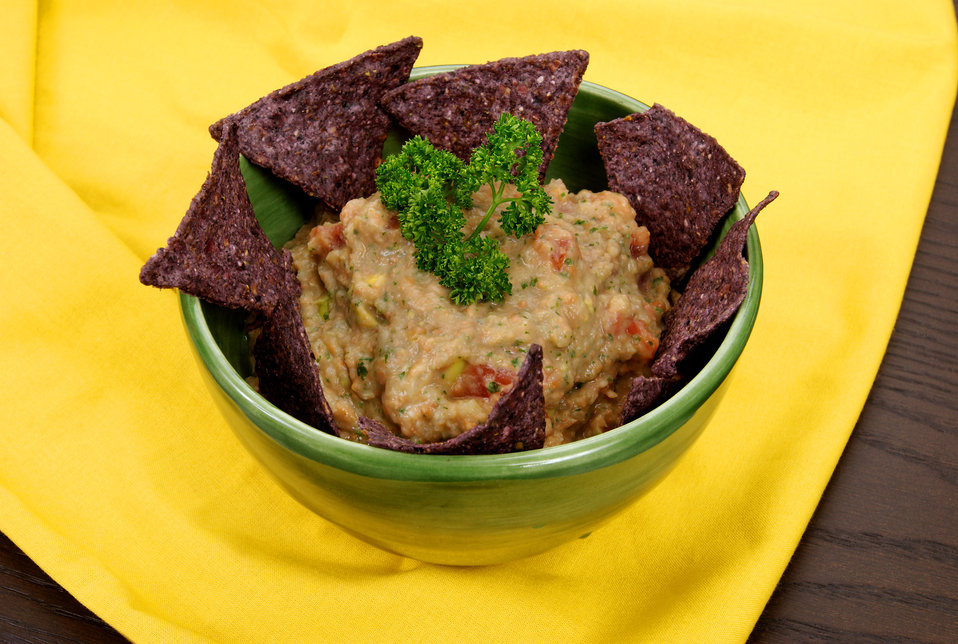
Garnished with a sprig of parsley, this image depicts a close-up of a bowl containing blue corn taco chips and guacamole dip. The recipe is a rather simple one, calling for mashed avocados, diced tomatoes, chopped garlic, minced onion, and an optional addition of lemon or lime juice. Some people spice to taste using salt, cumin, cayenne pepper, and cilantro.